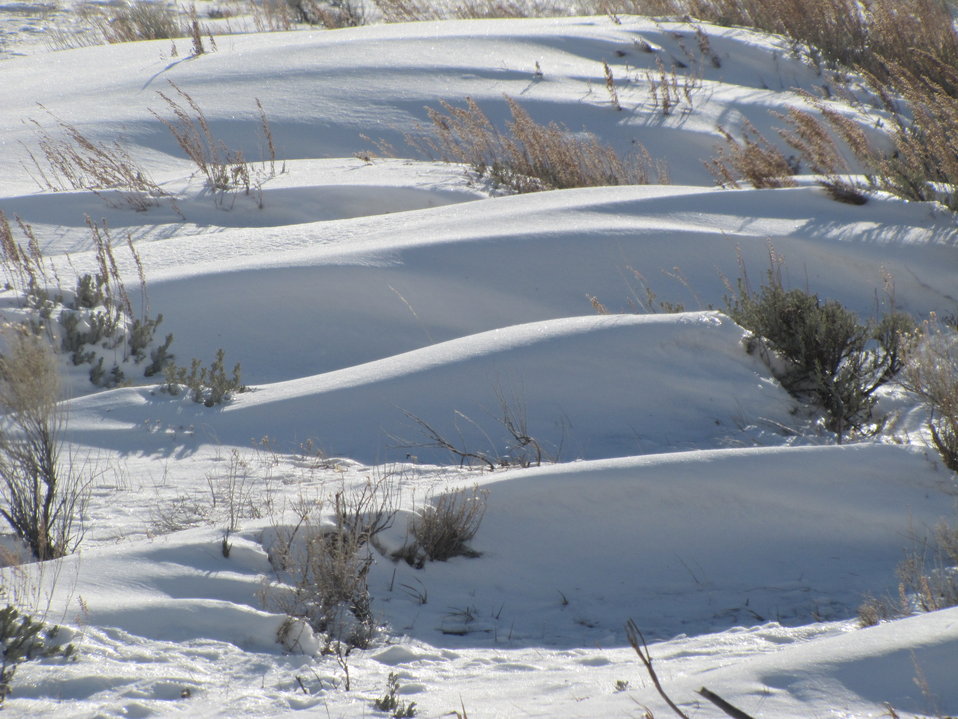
Wind Effects

Small drifts are evidence of recent strong winds.